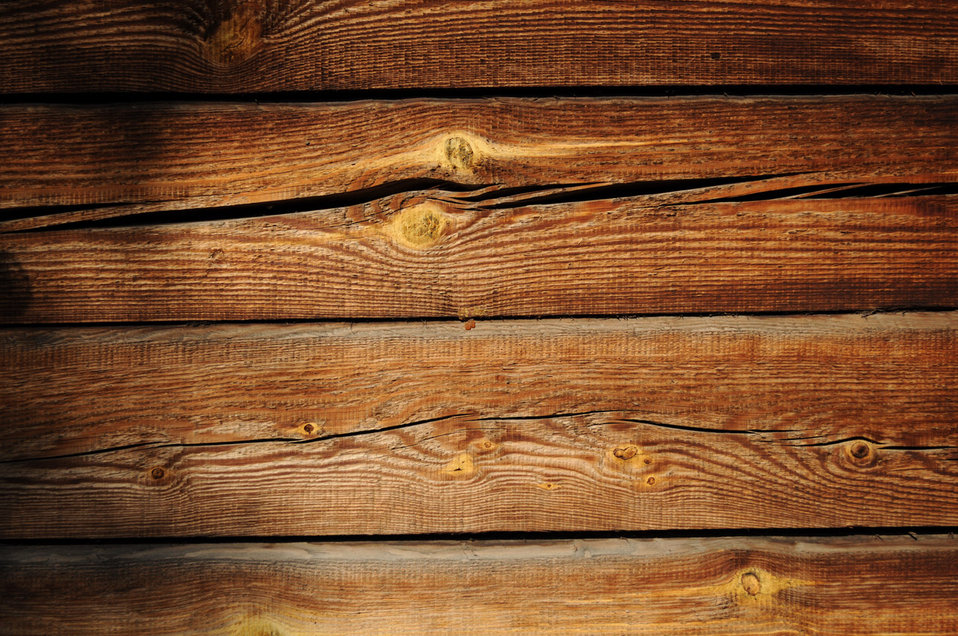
Old board

The texture of old boards.